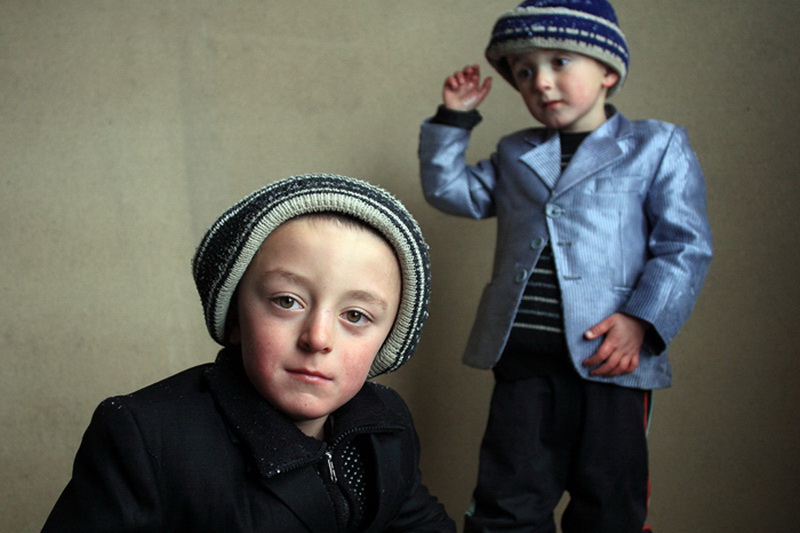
Yaghnobi People